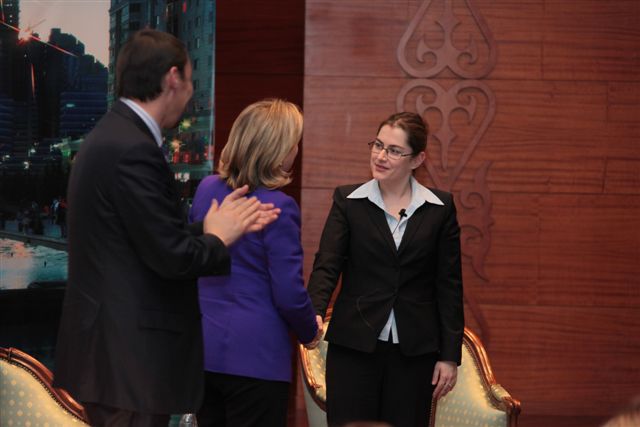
Secretary Clinton Participates in a Town Hall

U.S. Secretary of State Hillary Rodham Clinton participates in a Town Hall on Empowering Civil Society for Central Asia's Future at Eurasian University in Astana, Kazakhstan, on November 30, 2010.